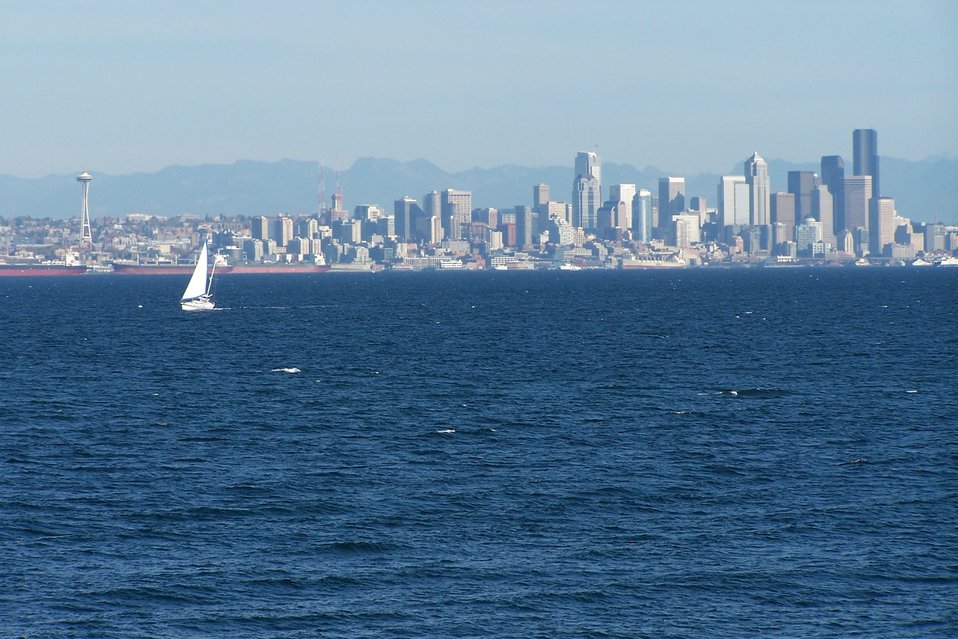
View of Seattle from Elliott Bay

Elliott Bay is truly an urban waterbody where recreational sailboats coexist with industrial container ships.

Learn more about the Puget Sound Ecosystem

Learn more about EPA